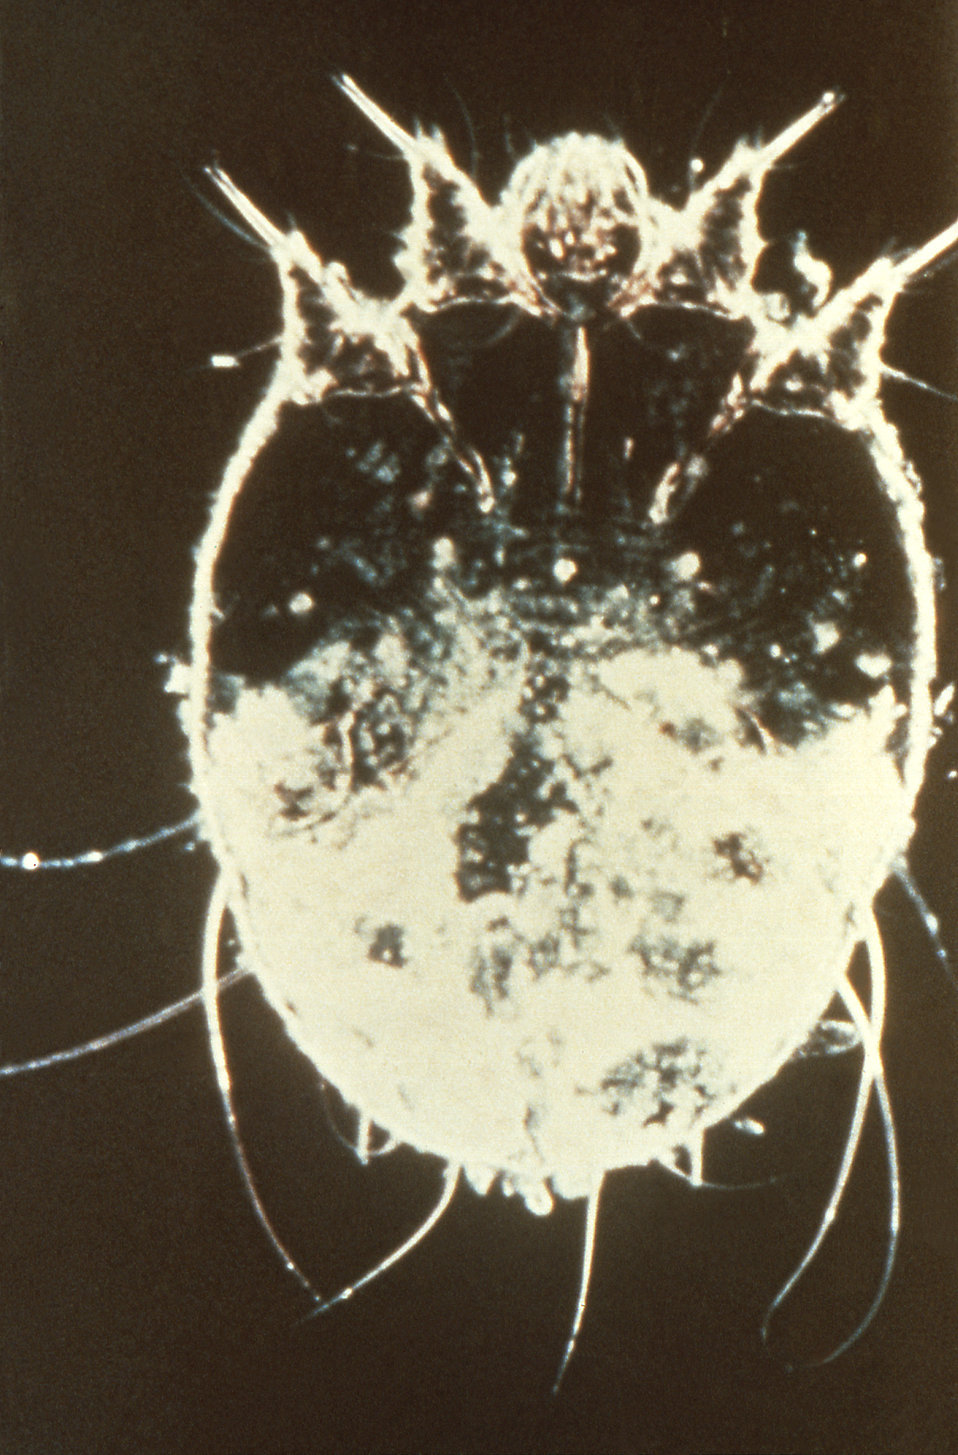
This is a Sarcoptes scabiei var. hominis or 'itch mite', often associated with the transmission of human scabies.